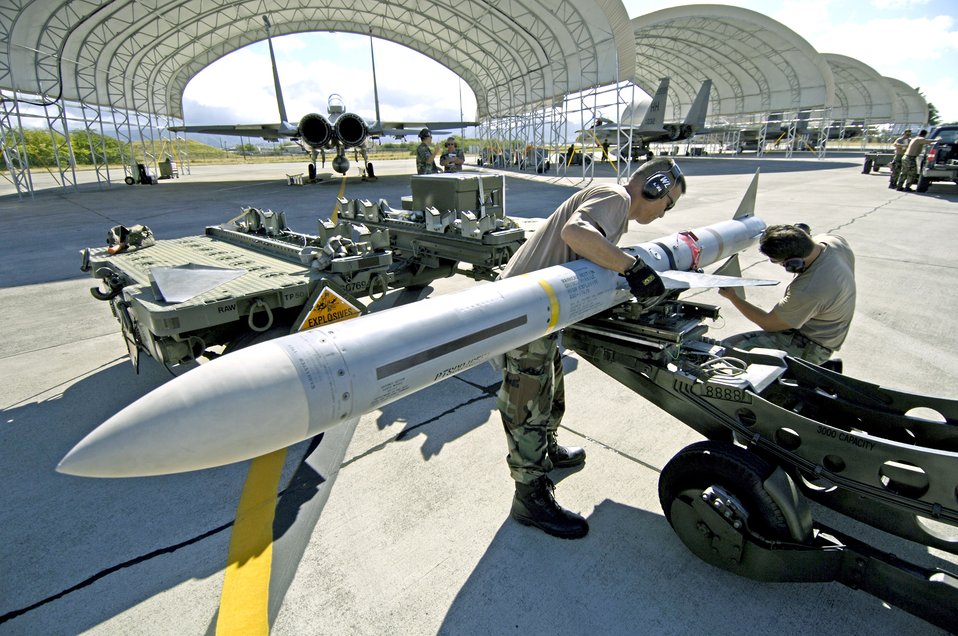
Total force at work in RIMPAC

Staff Sgt. Arthur Hamabata and Staff Sgt. Gabriel Coronado install the wings and fins on an AIM-7 Sparrow missile at Hickam Air Force Base, Hawaii, on July 16 during the Rim of the Pacific Exercise 2006. The Airmen are with the Hawaii Air National Guard's 154th Aircraft Maintenance Squadron.